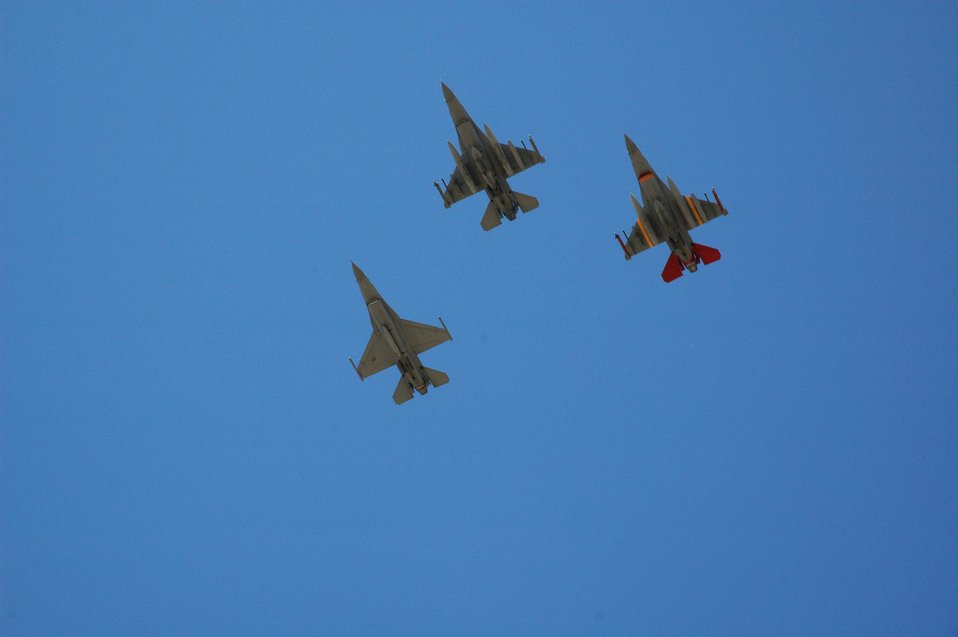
Reserve wing closes chapter in history

The last three F-16 Fighting Falcons assigned to the 944th Fighter Wing perform a ceremonial flyover over Luke Air Force Base, Ariz., Feb. 12 as hundreds of unit members bid farewell. The three F-16s were the last of 17 to depart the base as part of Base Realignment and Closure Commission actions.